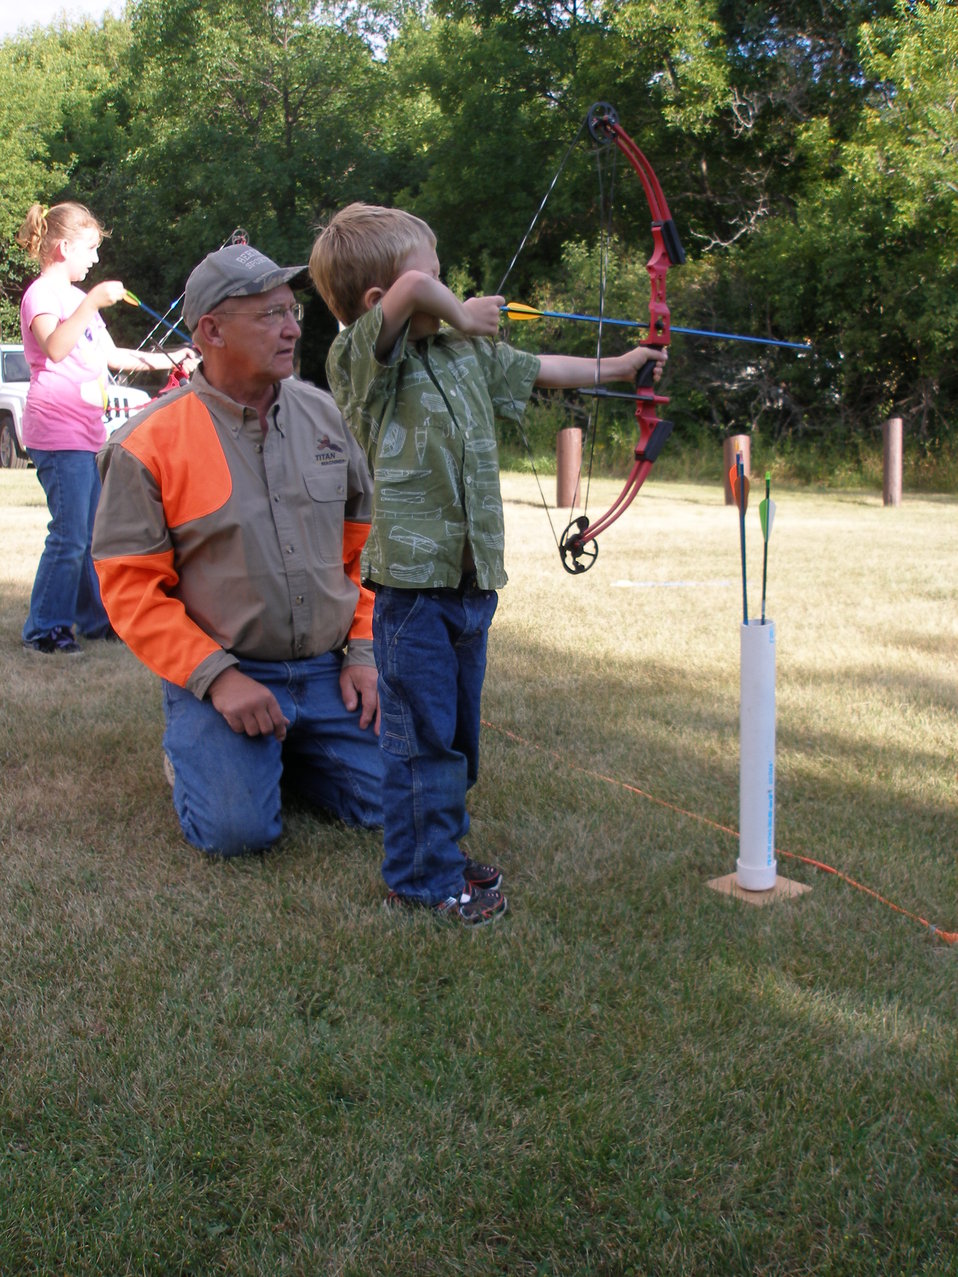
2011 Greenwing Day - Archery Session

Des Lacs National Wildlife Refuge, Tasker's Coulee

Look at that form - he is already a pro!